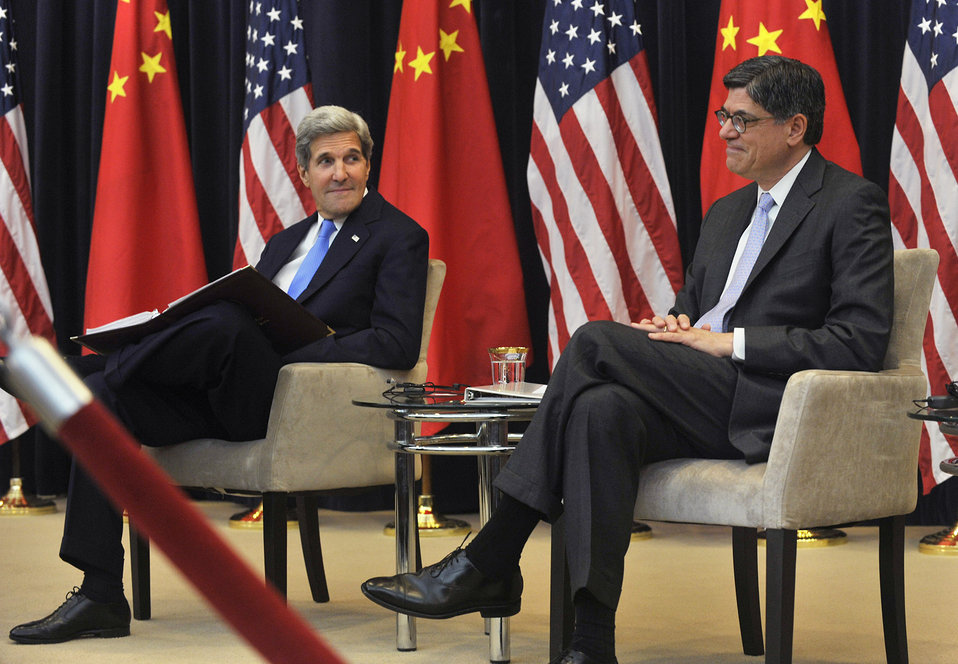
Secretary of State John Kerry and Secretary Lew during U.S. China Strategic and Economic Dialogue

July 10, 2013 - Secretary Kerry and Secretary Lew listen while Vice President Joseph Biden delivers remarks during the opening session at the State Department.